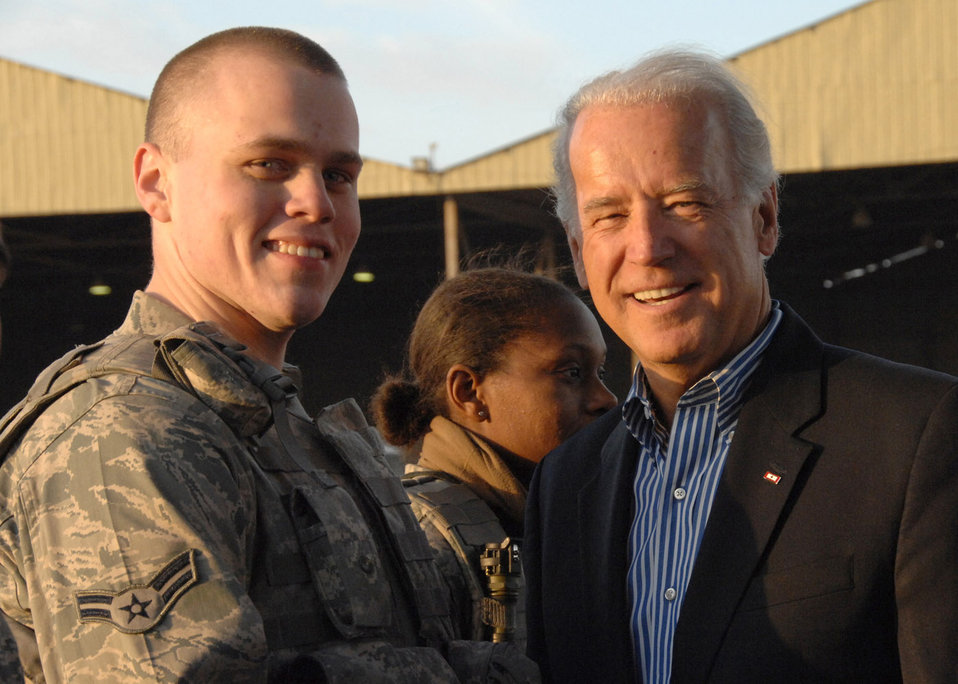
Vice president-elect meets Airmen in Southwest Asia

Airman 1st Class Sean Scroggins poses for a photo with Vice President-elect Joe Biden Jan. 12 at an air base in Southwest Asia. Airman Scroggins is assigned to the 387th Expeditionary Security Forces Squadron.